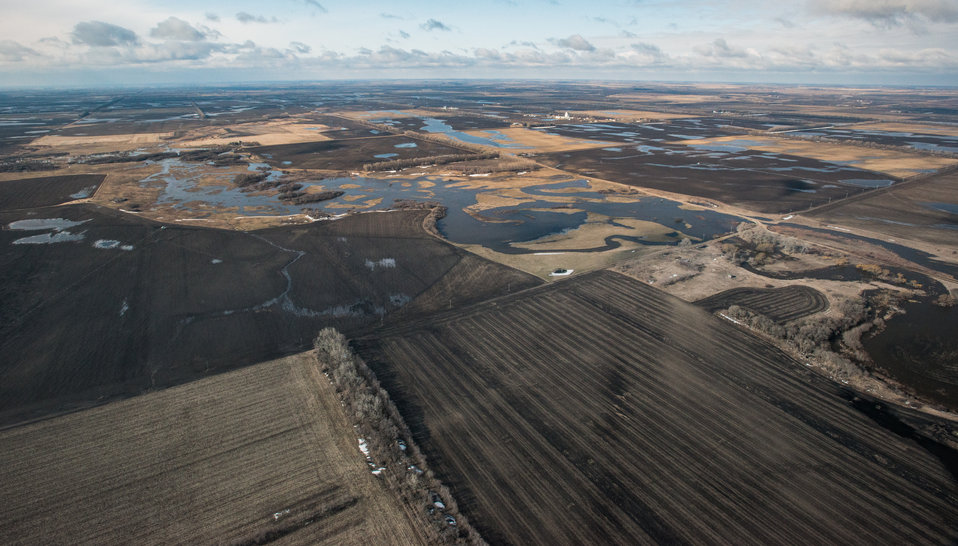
Proposed Dam site #10, on Turtle River Watershed in Grand Forks County, ND, part of the Red River basin, on Wednesday, May 1, 2013. To learn about the Red River Basin Initiative, see www.mn.nrcs.usda.gov/news/features13/RRBI.html.